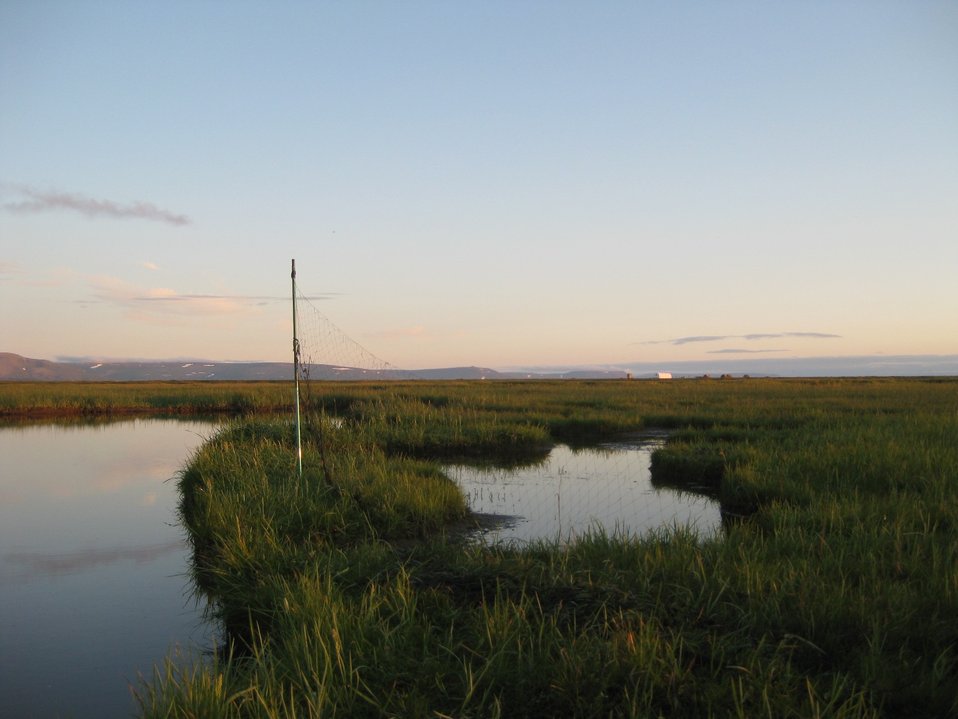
A long day of mist-netting

Mist nets are used to capture birds on their nests, in flight, etc. Bird that are captured are typically measured, weighed, and banded.

USFWS Yukon Delta NWR